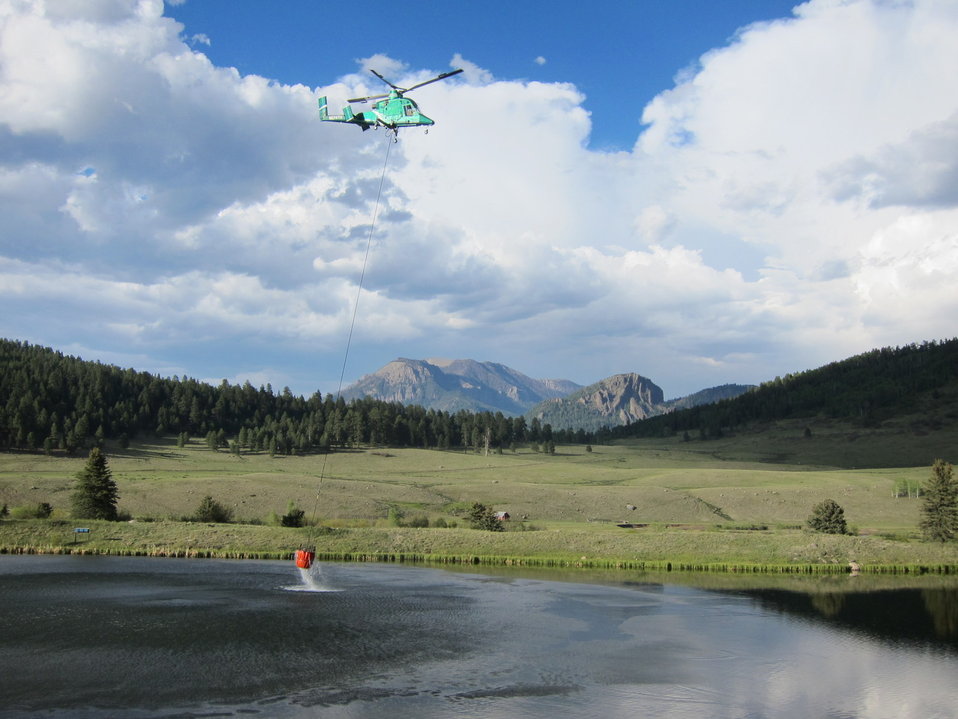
A helicopter fills it water bucket to fight the Little Sand Wildfire in the San Juan National Forest near Pagosa Springs, CO on Friday, June 1, 2012. The wildfire was started by a lightening strike on May 13, 2012. The fire is in rugged and inaccessible terrain, north of the Piedra River, and is currently estimated at 14,224 acres with 30% containment as of June 20, 2012.